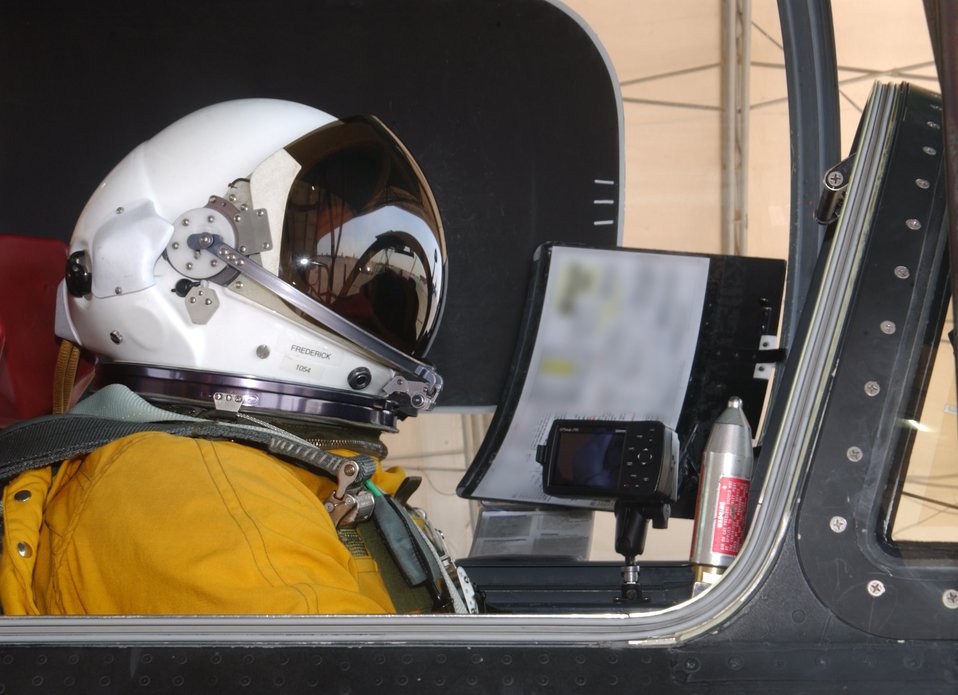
Flying high

Capt. Karl Frederick goes through preflight checks in the cockpit of his U-2 Dragonlady Oct. 24 before a mission. Captain Frederick, assigned to the 99th Expeditionary Reconnaissance Squadron, is part of the vital intelligence surveillance and reconnaissance team flying missions in Southwest Asia for Operations Enduring Freedom and Iraqi Freedom.